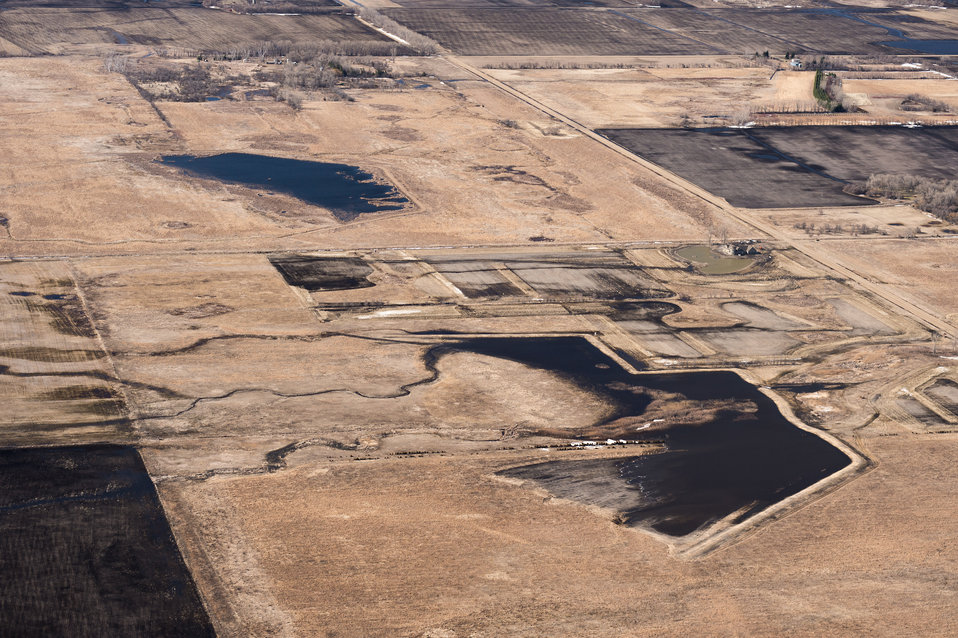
Ehlert North U.S. Department of Agriculture (USDA) Natural Resources Conservation Service (NRCS) Wetland Reserve Program (WRP) in Wilkin County, MN, on Tuesday, April 30, 2013. For information about this and other programs from the USDA Red River Basin Initiative (RRBI) please see www.mn.nrcs.usda.gov/news/features13/RRBI.html.